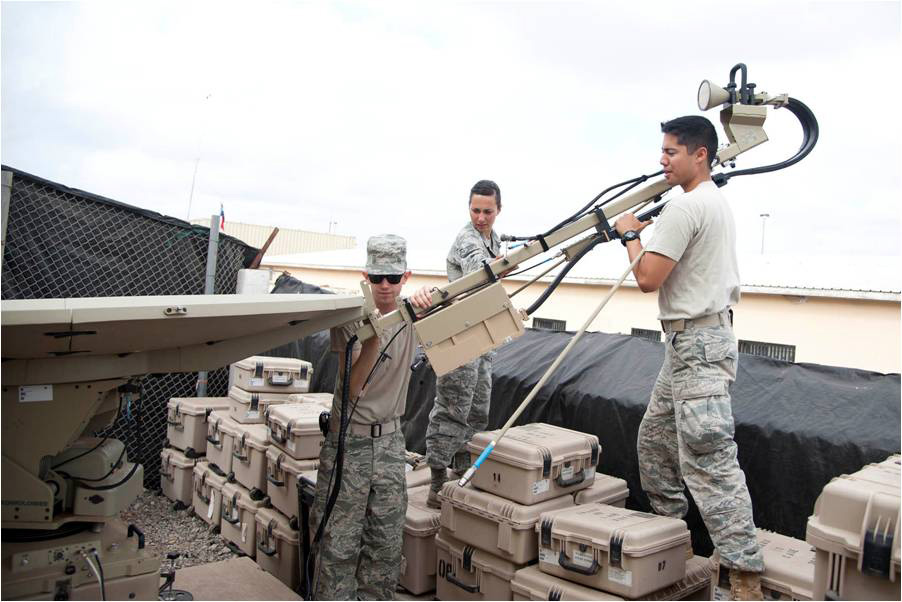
CJTF Horn of Africa

Tactical Networking technicians from the Combined Joint Task Force – Horn of Africa’s communications directorate assemble an access point satellite terminal here April 19, 2012. These terminals, operated by the TACNET section, provides U.S. troops a secure medium for communications in support of CJTF-HOA missions.